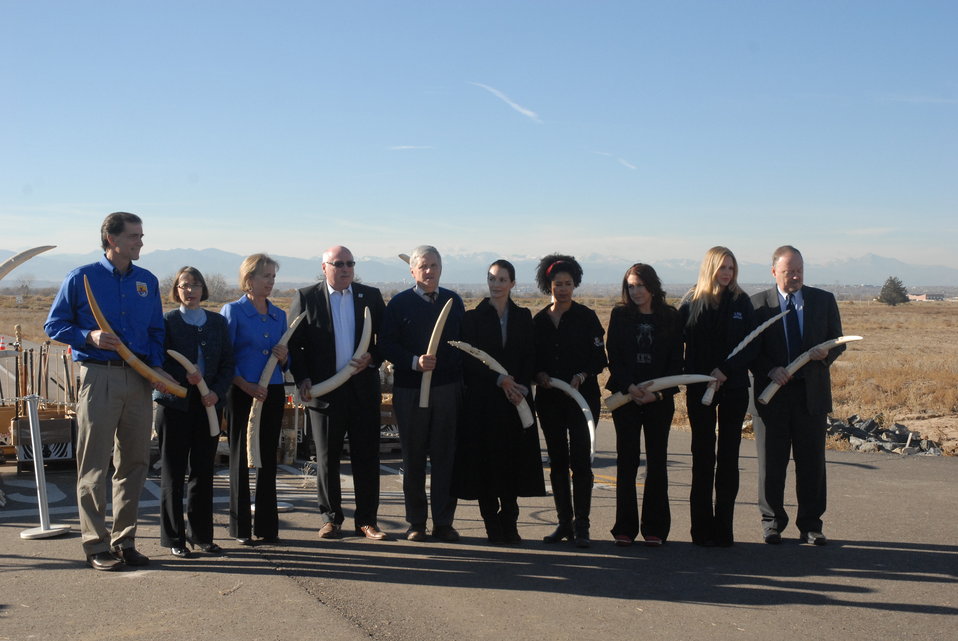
Guest speakers prepare to load ivory into the crusher.

Left to right:

Dan Ashe - Director of the U.S. Fish and Wildlife Service
Judith Garber - Principal Deputy Assistant Secretary, Department of State, Bureau of Oceans and International Environmental and Scientific Affairs
Ginette Hemley - Senior Vice President, World Wildlife Fund - U.S.
Azzedine Downes - President and CEO, International Fund for Animal Welfare
David J. Hayes - Former Deputy Secretary of the U.S. Department of the Interior
Kristin Davis - Actress and Patron for the David Sheldrick Wildlife Trust
Dr. Paula Kahumbu - CEO of WildlifeDirect
Joely Fisher - Actress and IFAW Ambassador
Kristin Bauer - Actress and IFAW Ambassador
Robert G. Dreher - Assistant Attorney General, Department of Justice